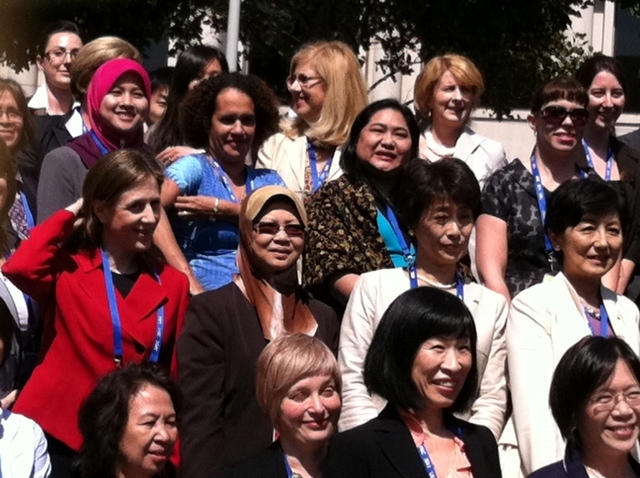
Principal Deputy Assistant McCarthy and Senior Advisor Porges Pose for a Photo During the APEC Women and the Economy Summit

Principal Deputy Assistant Secretary of State for Economic, Energy and Business Affairs Deborah A. McCarthy, second from right on top row, and Commercial and Business Affairs Global Entrepreneurship Program Senior Advisor Shelly Porges, right of PDAS McCarthy, pose for a photo during the Asia Pacific Economic Cooperation Women and the Economy Summit in San Francisco, California, on September 13, 2011.